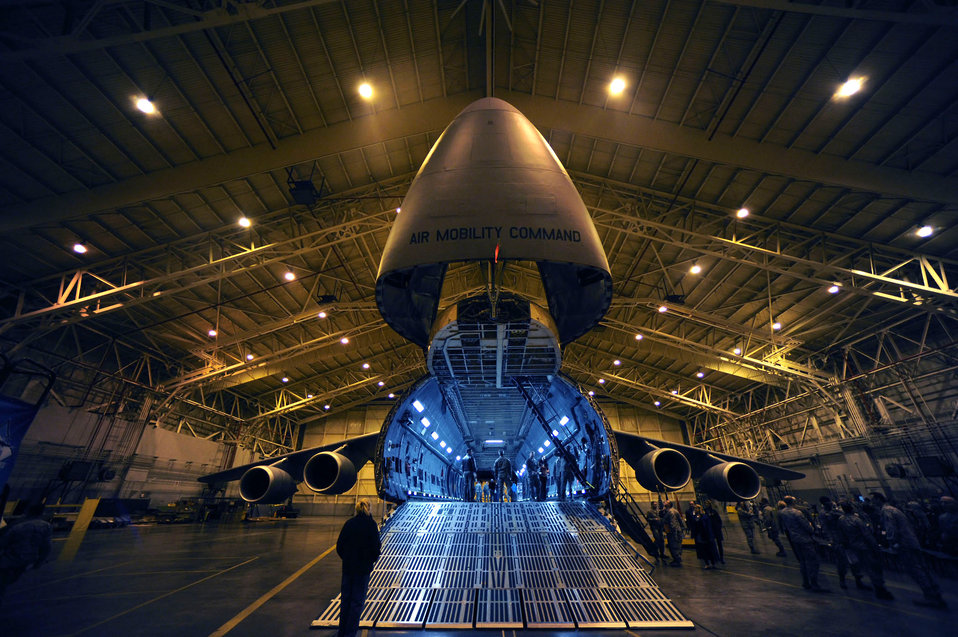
Open sesame

Airmen with New York Air National Guard's 105th Maintenance Squadron held a ceremony for a reconditioned C-5M Super Galaxy Nov. 5, 2010, at Stewart Air National Guard Base, N.Y.